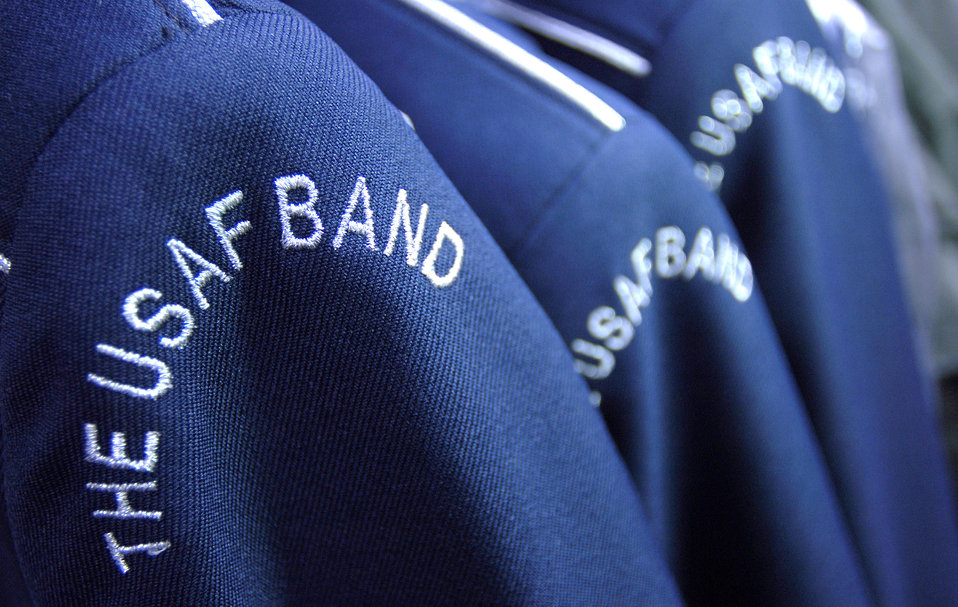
Band Seamstress

BOLLING AIR FORCE BASE, D.C. (AFPN) -- U.S. Air Force Band uniforms await the careful care they get from retired Senior Master Sgt. Juanita Williams. Ms. Williams volunteers her time once a week to help keep band members here looking their best for their many performances throughout the Washington, D.C. area and on their world travels. She was a part of the band for many years before her retirement in 1995.